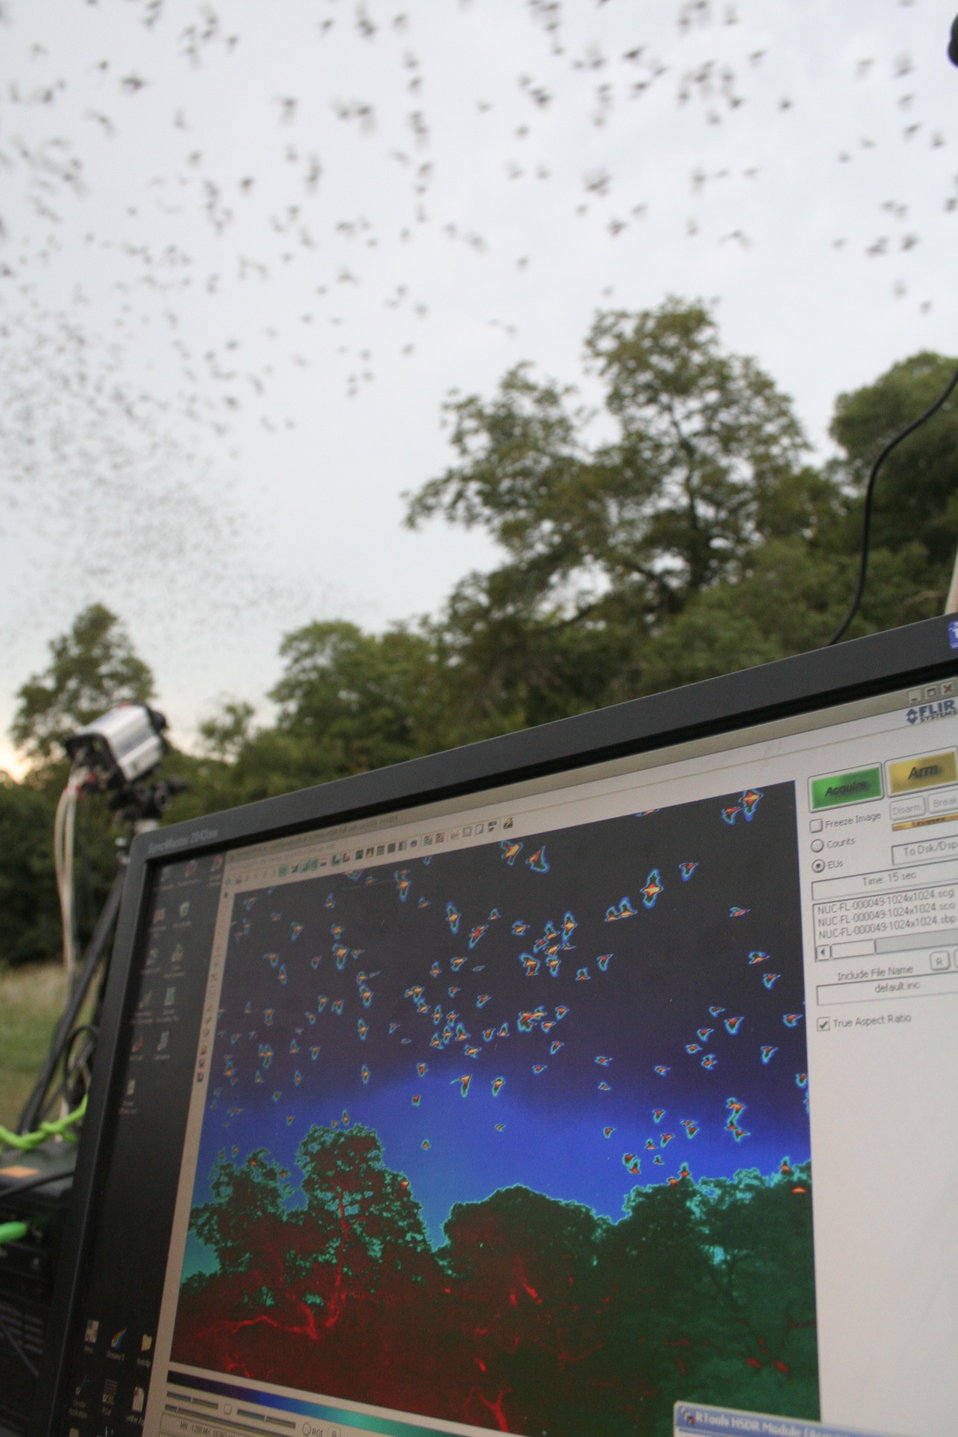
Bats can be seen on the thermal image on the screen